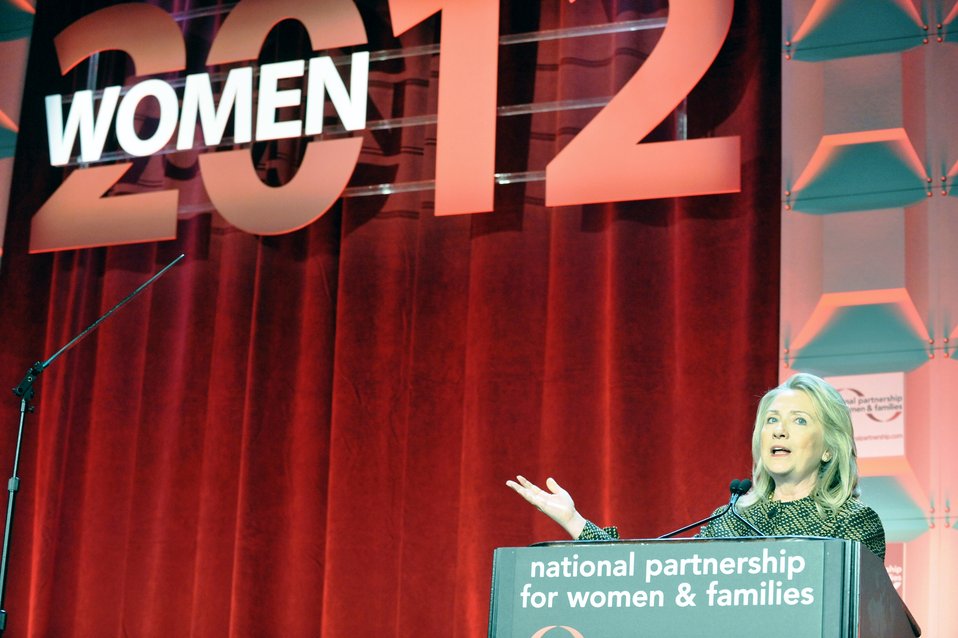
Secretary Clinton Delivers Remarks at the National Partnership for Women and Families

U.S. Secretary of State Hillary Rodham Clinton delivers remarks at the National Partnership for Women and Families in Washington, D.C., on June 21, 2012.